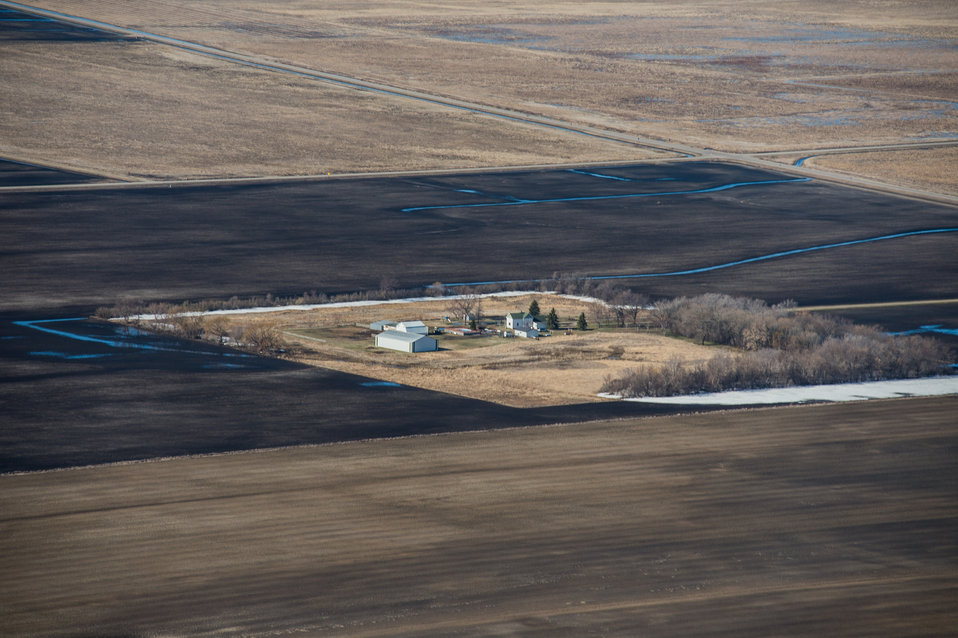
Ehlert U.S. Department of Agriculture (USDA) Natural Resources Conservation Service (NRCS) Wetland Reserve Program (WRP) in Wilkin County, MN, on Tuesday, April 30, 2013. For information about this and other programs from the USDA Red River Basin Initiative (RRBI) please see www.mn.nrcs.usda.gov/news/features13/RRBI.html.